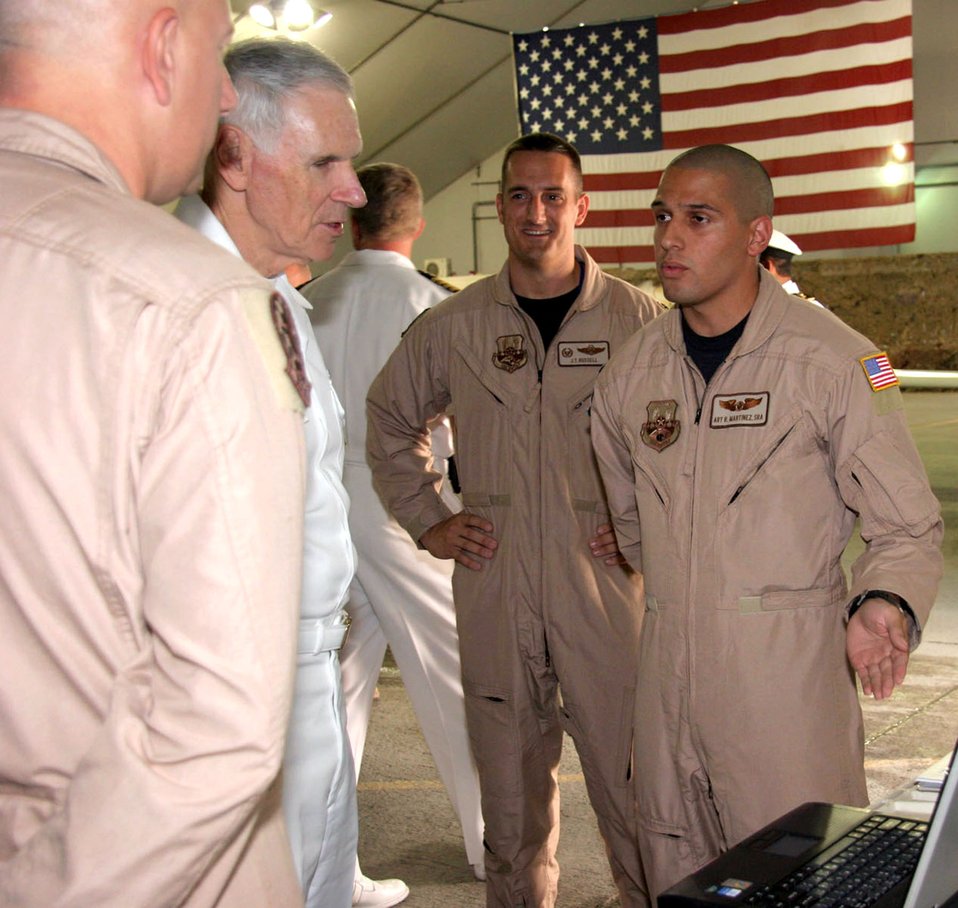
Admiral Fallon visits 380th AEW Airmen

Senior Airman Arturo Martinez briefs Adm. William J. Fallon Sept. 17 on the capabilities of the AWACS aircraft mission. Admiral Fallon is the U.S. Central Command commander, and Airman Martinez is an AWACS aircrew member with the 380th Air Expeditionary Wing in Southwest Asia.